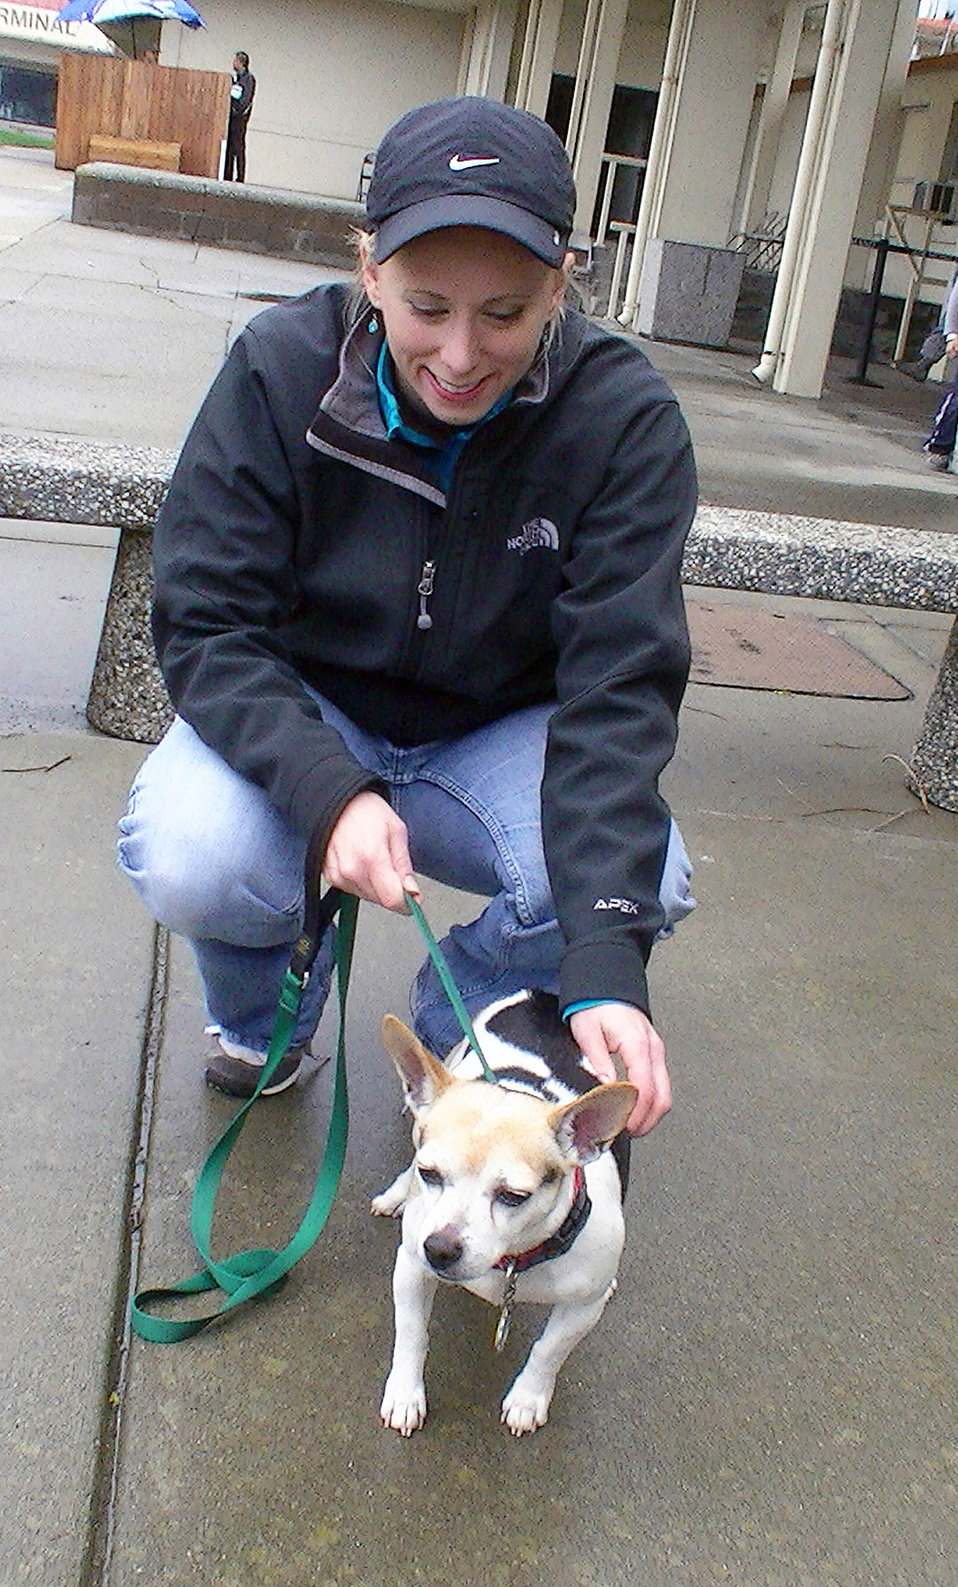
Taking care of pets

Lauren Leighton takes a dog for a walk while volunteering to care for pets of family members who arrived at the Joint Reception Coordination Center at Travis Air Force Base, Calif., March 23, 2011. The pets, along with their owners, traveled from Japan as part of the military-assisted voluntary authorized departure after the country was hit by an earthquake and subsequent tsunami March 11.